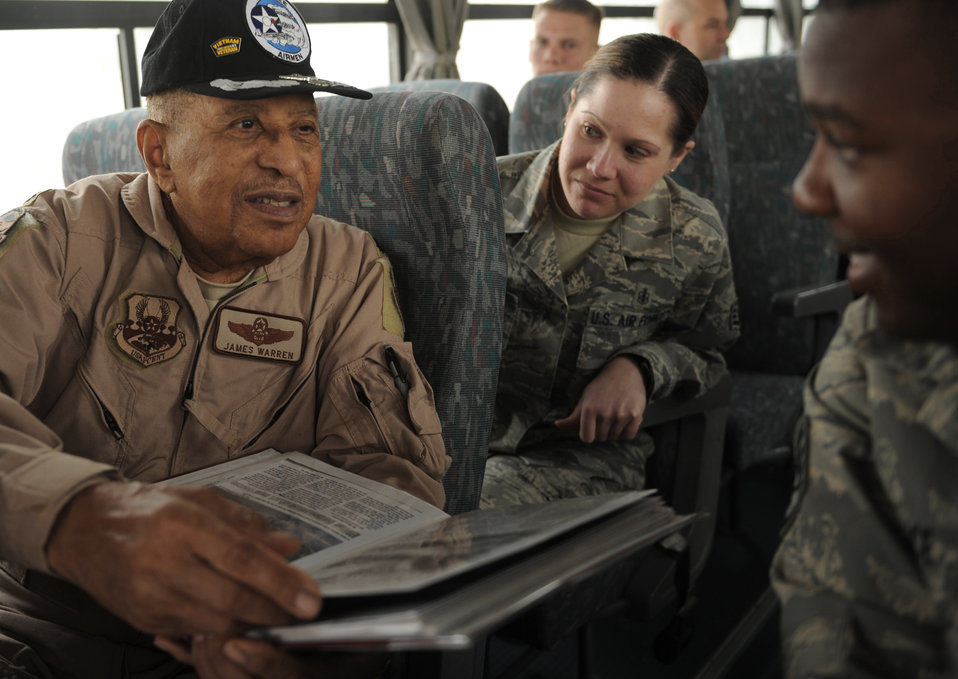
Tuskegee Airmen ... the legacy continues

Retired Lt. Col. James Warren, a Tuskegee Airman, shares his scrapbook with Staff Sgts. Kelli Wietlisbach and Alphonso Price April 24 at Joint Base Balad, Iraq. Sergeant Wietlisbach is assigned to the 332nd Expeditionary Medical Support Squadron and Sergeant Price is assigned to the 332nd Expeditionary Security Forces Squadron.